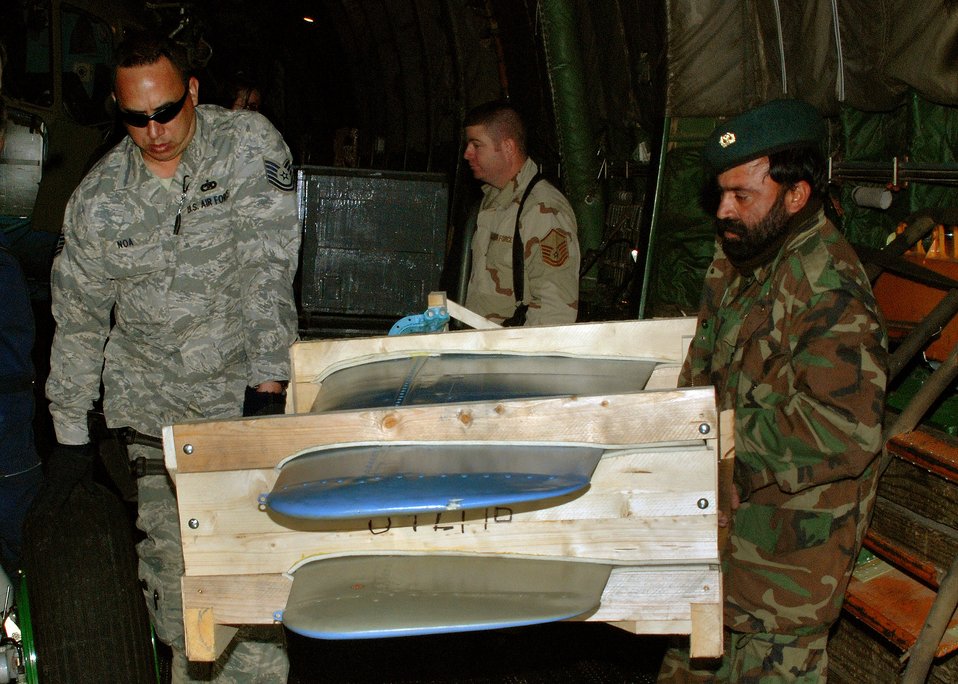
Airmen help deliver helicopters to Afghan military

Tech Sgt. John Noa helps Afghan national army air corps helicopter crew chief Sgt. Zulmi unload parts for a refurbished MI-17 helicopter from an Antonov 124 cargo plane Dec. 5 at Kabul, Afghanistan. The helicopter is the first of six to be delivered to the Afghan national army air corps from the Czech Republic.